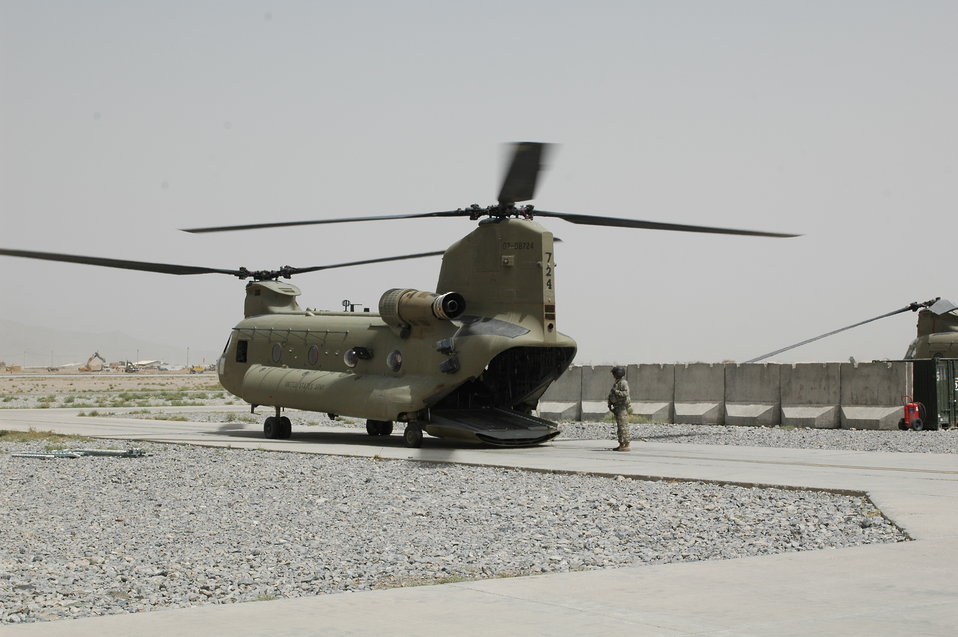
CODEL Berman